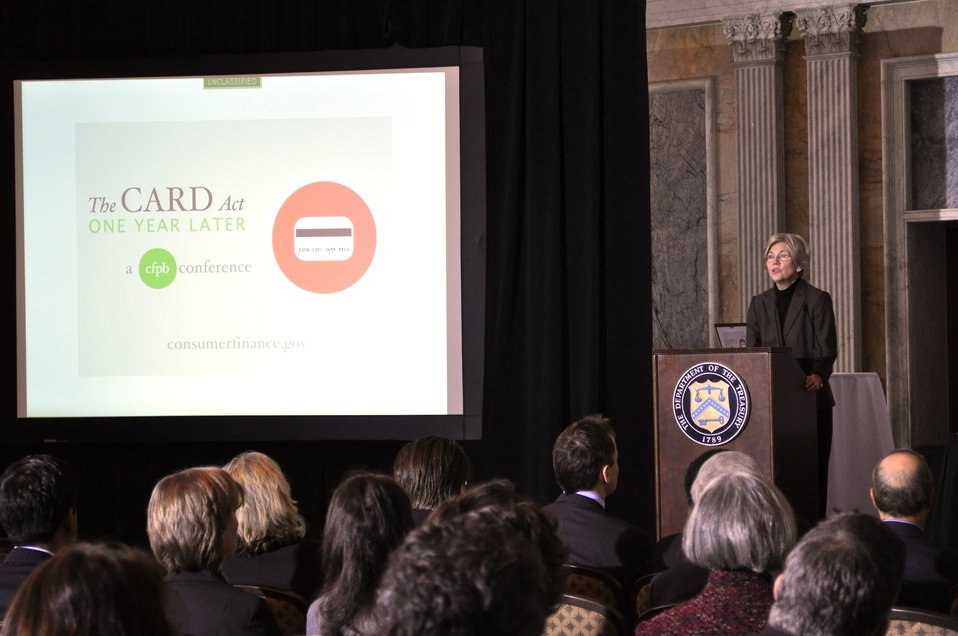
CFPB Conference on the Credit Card Act, 02/22/2011

One year ago today, on February 22, 2010, many of the provisions of the Credit Card Accountability, Responsibility, and Disclosure Act (CARD Act) took effect. The Consumer Financial Protection Bureau (CFPB) implementation team hosted a conference on this anniversary at the Treasury Department.